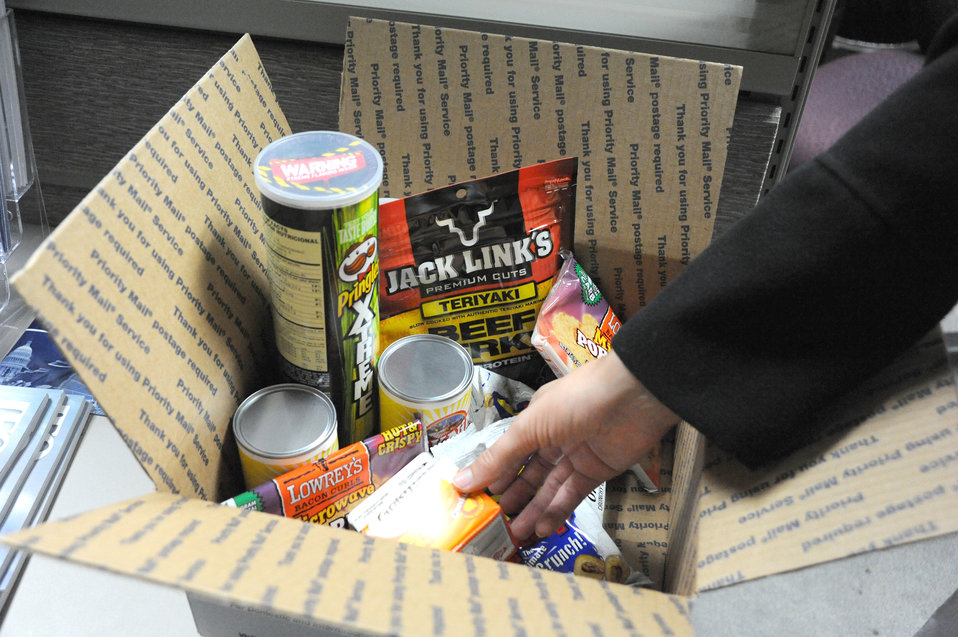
Care package

A deployment can be a lonely time in an Airman's life, but care packages, such as this one, create a long-distance connection that can make a big difference.